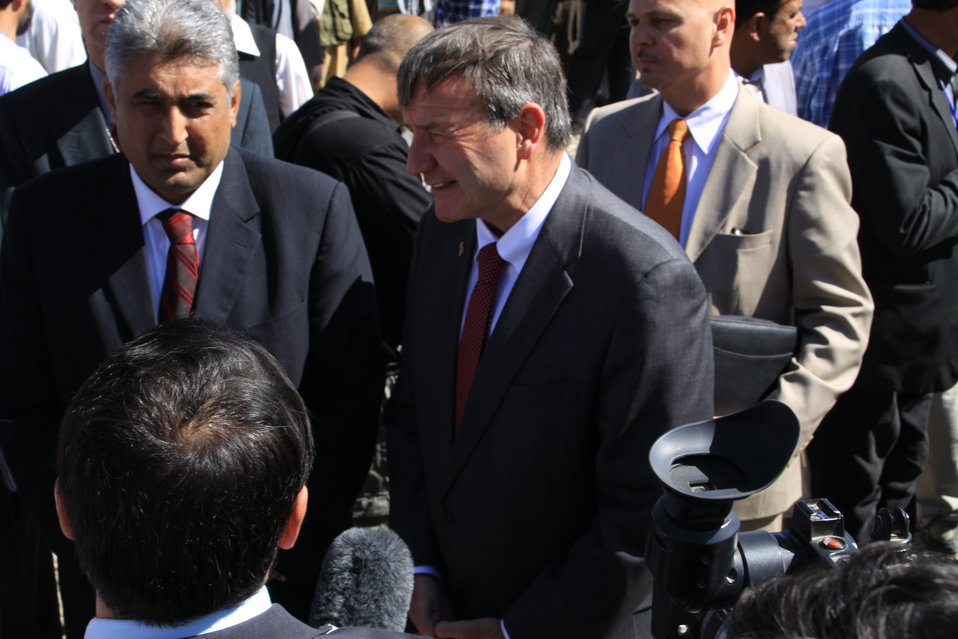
AVIPA Plus Wheat Seed Distribution 101005

US Ambassador Karl Eikenberry and USAID Acting Mission Director Kevin Brownawell joined the Minister of Agriculture, Irrigation and Livestock, H.E. Minister Mohammed Rahimi in signing a Memorandum of Understanding and distributing vouchers to area farmers for wheat and fertilizer.

US Ambassador Karl Eikenberry and USAID Acting Mission Director Kevin Brownawell joined the Minister of Agriculture, Irrigation and Livestock, H.E. Minister Mohammed Rahimi in signing a Memorandum of Understanding and distributing vouchers to area farmers for wheat and fertilizer.

US Ambassador Karl Eikenberry and USAID Acting Mission Director Kevin Brownawell joined the Minister of Agriculture, Irrigation and Livestock, H.E. Minister Mohammed Rahimi in signing a Memorandum of Understanding and distributing vouchers to area farmers for wheat and fertilizer.